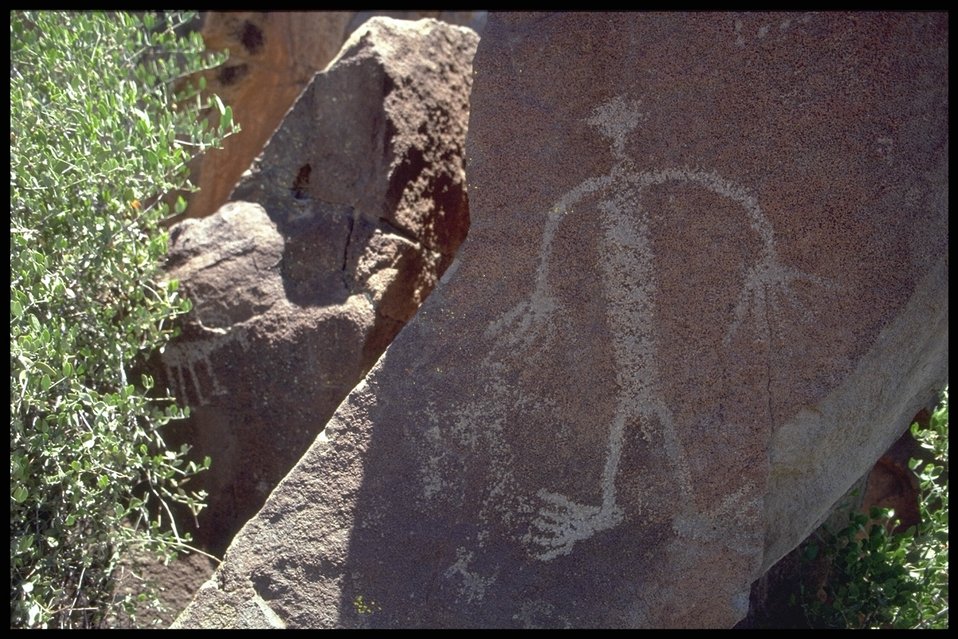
Petroglphs (Rock Art) can be found throughout the 71,000 Acres that make up the Agua Fria National Monument.